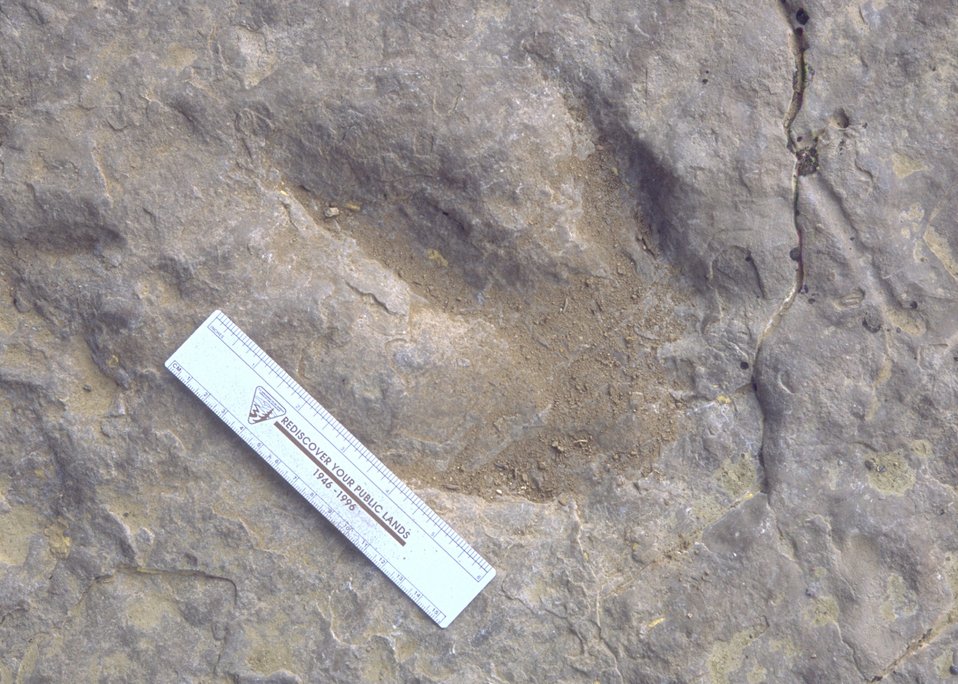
Detail of dinosaur track at the Red Gulch Dinosaur Tracksite, Worland Field Office.